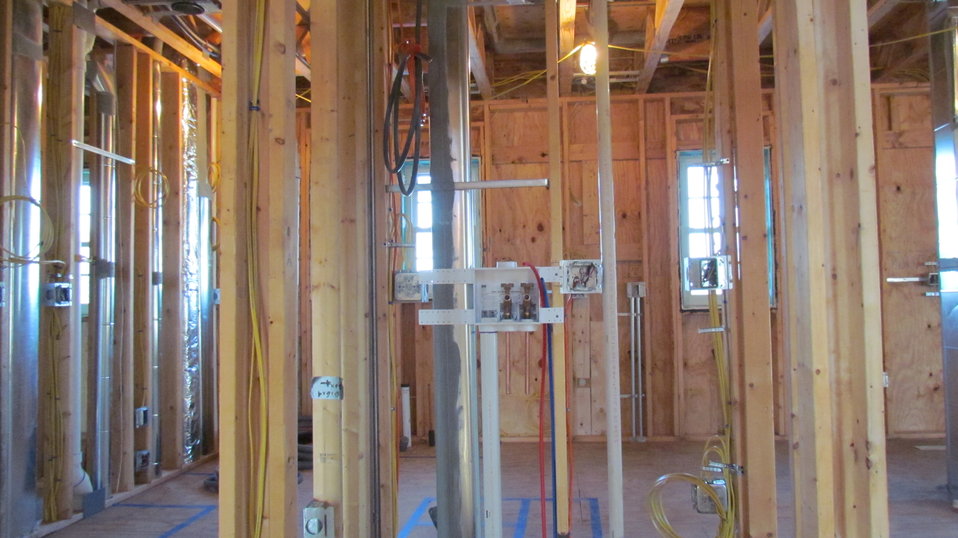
Plumbing “rough in” for washing machine located on first floor of NZERTF.